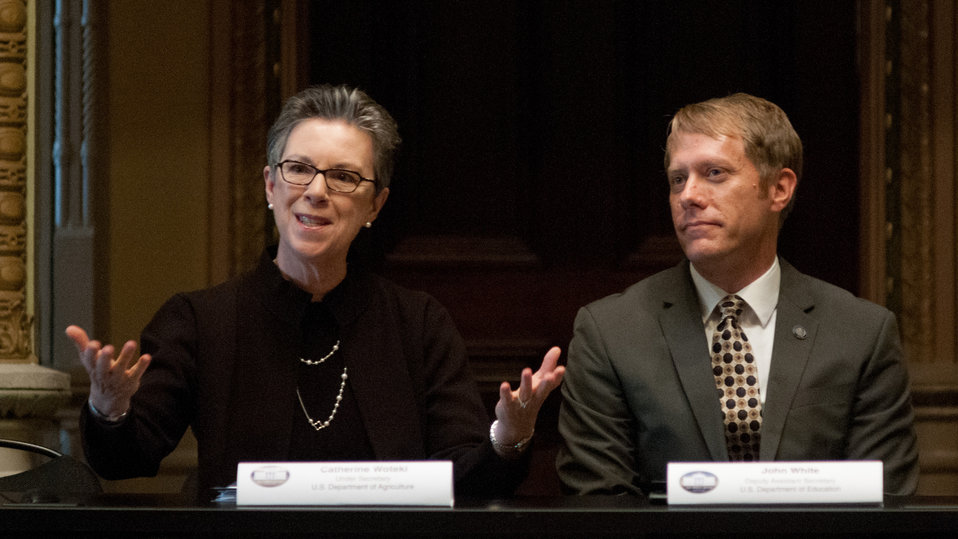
Agriculture Under Secretary for Research, Education and Economics (REE) Catherine Wotecki speaks at the Champions of Change awards program as Education Deputy Assistant Secretary John White listens at the Executive Office Building in Washington, D.C. on Tuesday, Oct. 9, 2012. The Champions of Change program was created to honor ordinary Americans doing great work in their communities. Each week, a different sector is highlighted and groups of Champions, ranging from educators to entrepreneurs to community leaders, are recognized for the work they are doing to serve and strengthen their communities.